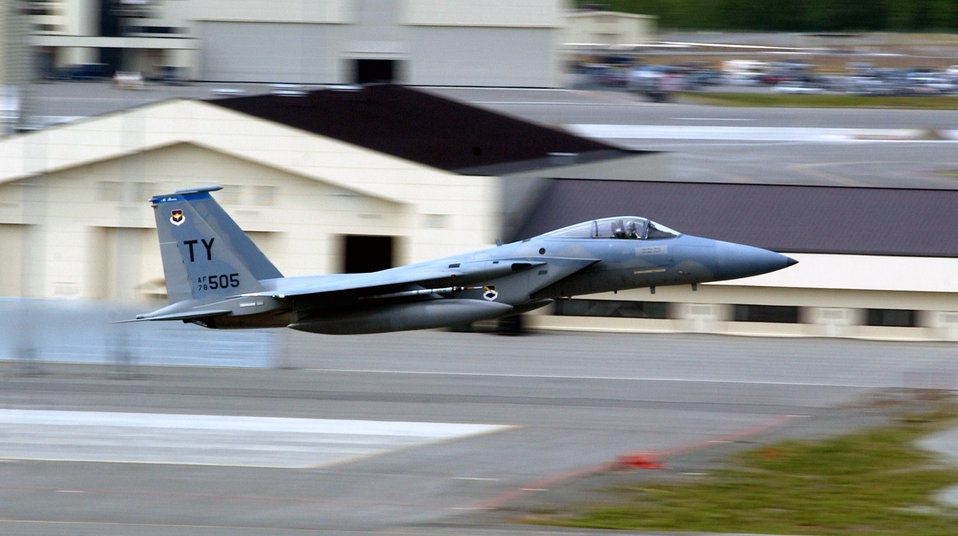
Eagle launch

ELMENDORF AIR FORCE BASE, Alaska -- An F-15C Eagle takes off for a mission in Cooperative Cope Thunder. Six F-15Cs and 81 servicemembers deployed here from Tyndall Air Force Base, Fla., to participate in Cope Thunder, a Pacific Air Forces-sponsored air combat training exercise which ends June 20.